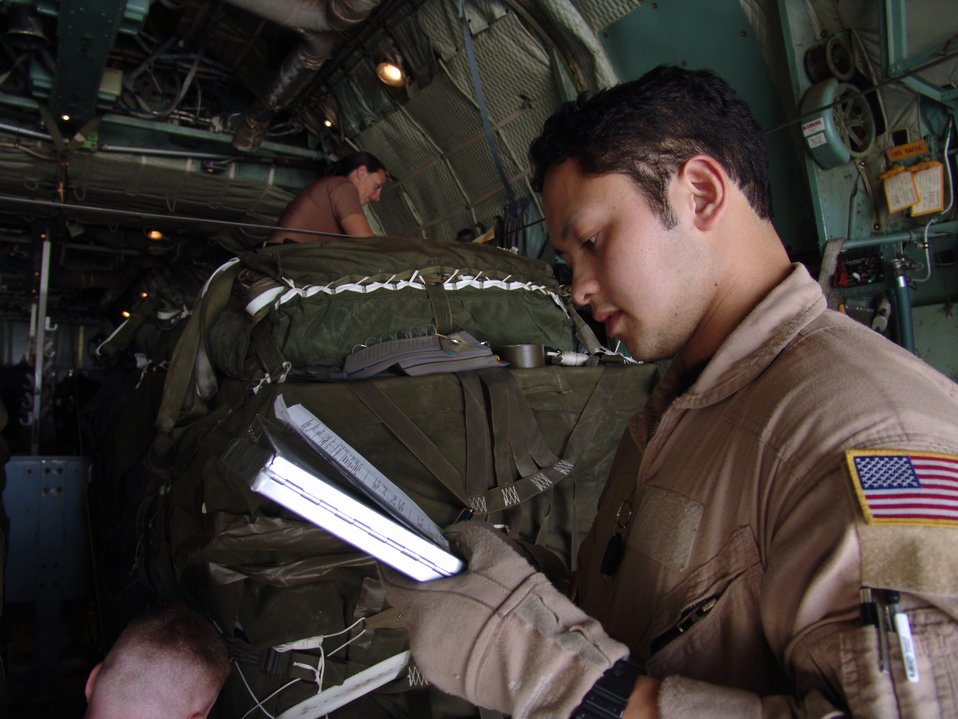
Hercules supply mission

SOUTHWEST ASIA -- Staff Sgt. Jeremy Sebolboro reviews airdrop procedures while troops prepare containerized delivery system pallets onboard a C-130 Hercules. Each pallet contained basic medical supplies, food and blankets. The pallets were airdropped by a C-130 to Soldiers in rural areas of Afghanistan, and the supplies were distributed to needy villagers in the local area. Sergeant Sebolboro is a loadmaster with the 737th Expeditionary Airlift Squadron at a forward-deployed location and is from Pope Air Force Base, N.C.